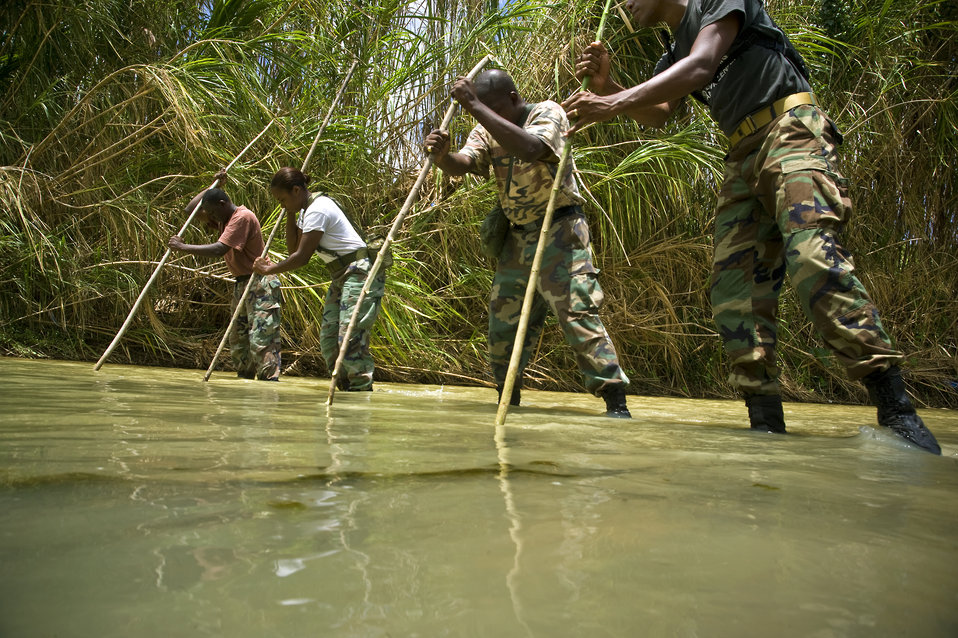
Operation Southern Partner

Members of the Royal St. Lucia Police Force's Special Service Unit make their way across a stream using measuring sticks while learning swift-water rescue procedures being taught by U.S. Air Force pararescuemen June 5 during Operation Southern Partner at La Toc, St. Lucia. Operation Southern Partner is a long term commitment between U.S. and partner nations to share experiences, information, vital skills, tactics and techniques in preparation for future regional challenges that require cooperative solutions.